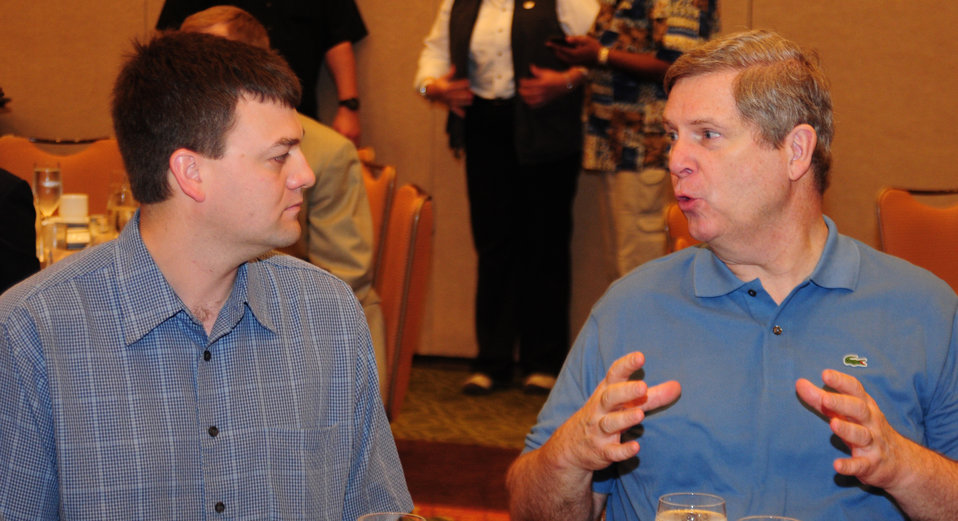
Agriculture Secretary Tom Vilsack discusses issues with State Board Members and young farmers and ranchers at the Iowa Farm Bureau Breakfast at the Sheridan Waikiki, Hawaii, on Sunday, January 8, 2012.